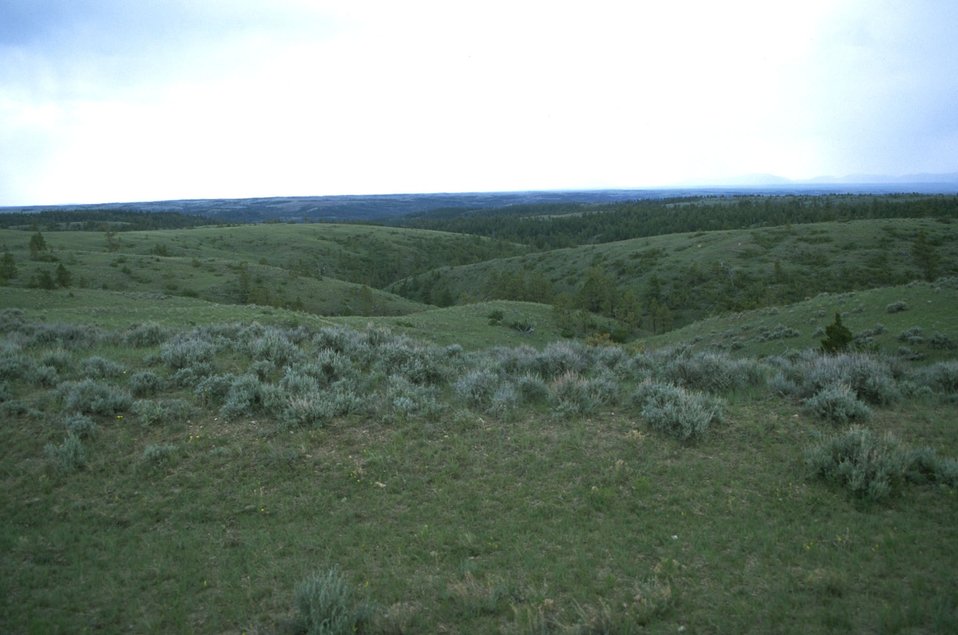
Sagebrush range with hills and coulees